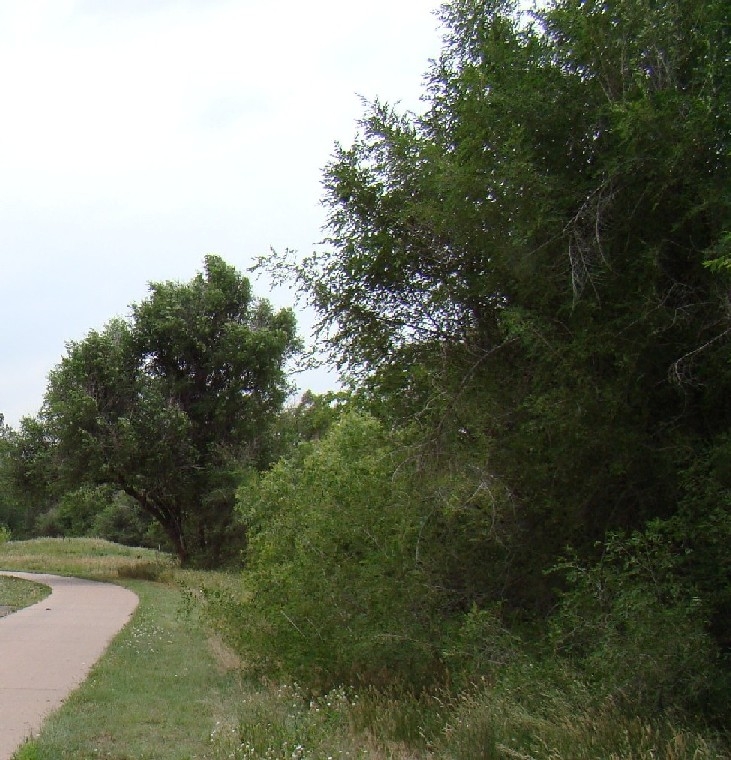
Overland Pond Park Before

Restoration project at Overland Pond Park. Banks of South Platte River in Denver, CO before the removal of invasive Siberian elm trees. The main goals of the project are to enhance migratory bird habitat & promote environmental education opportunities.